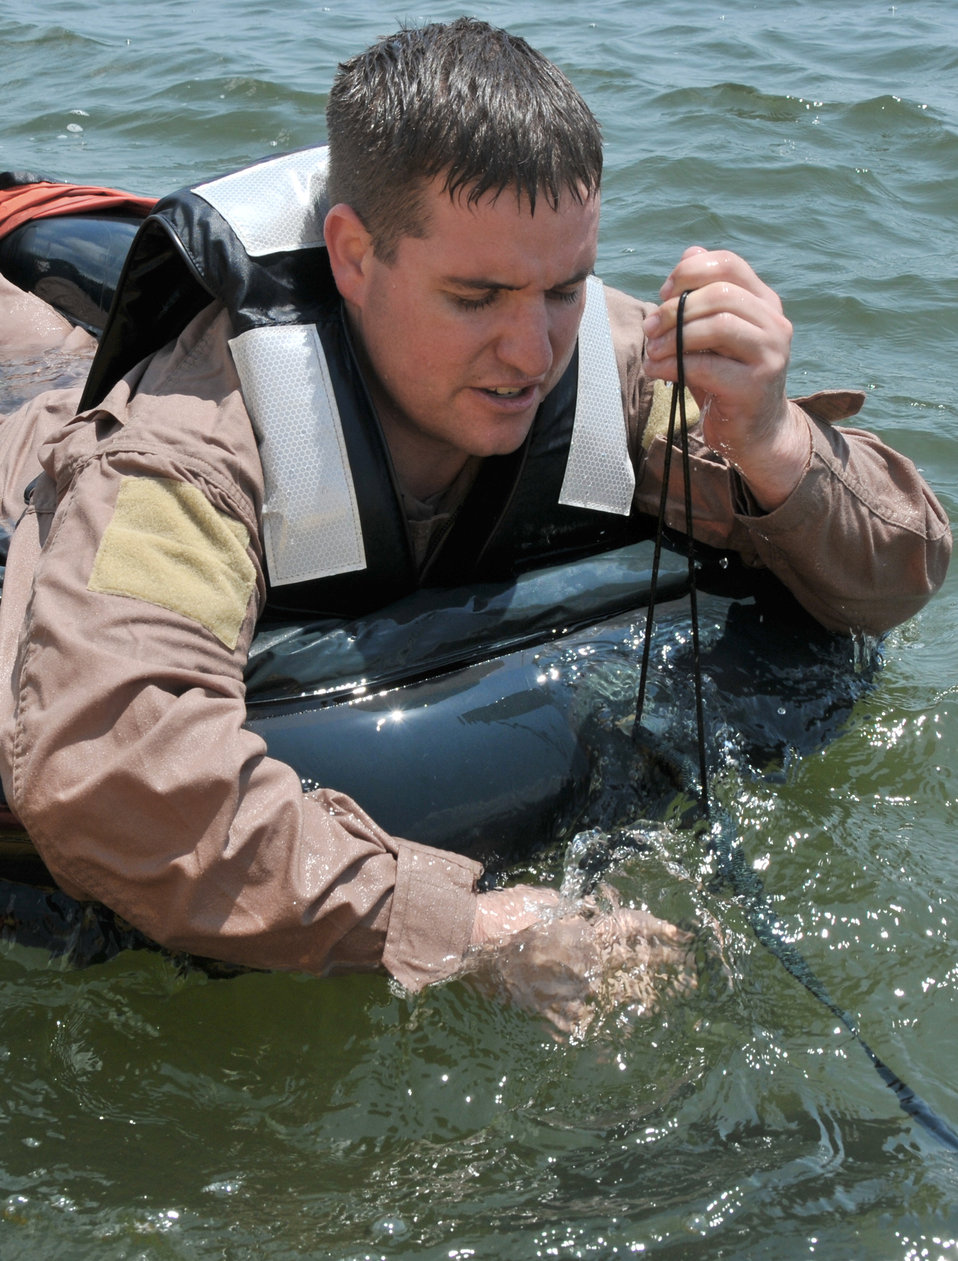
Water survival training course

Staff Sgt. Anthony Barrette pulls up an anchor attached to the front of a one-man life raft during a water survival training course May 2, 2011, at Charleston Harbor, South Carolina. Sergeant Barrette is a survival, evasion, resistance and escape specialist from the 437th Operations Support Squadron at Joint Base Charleston.